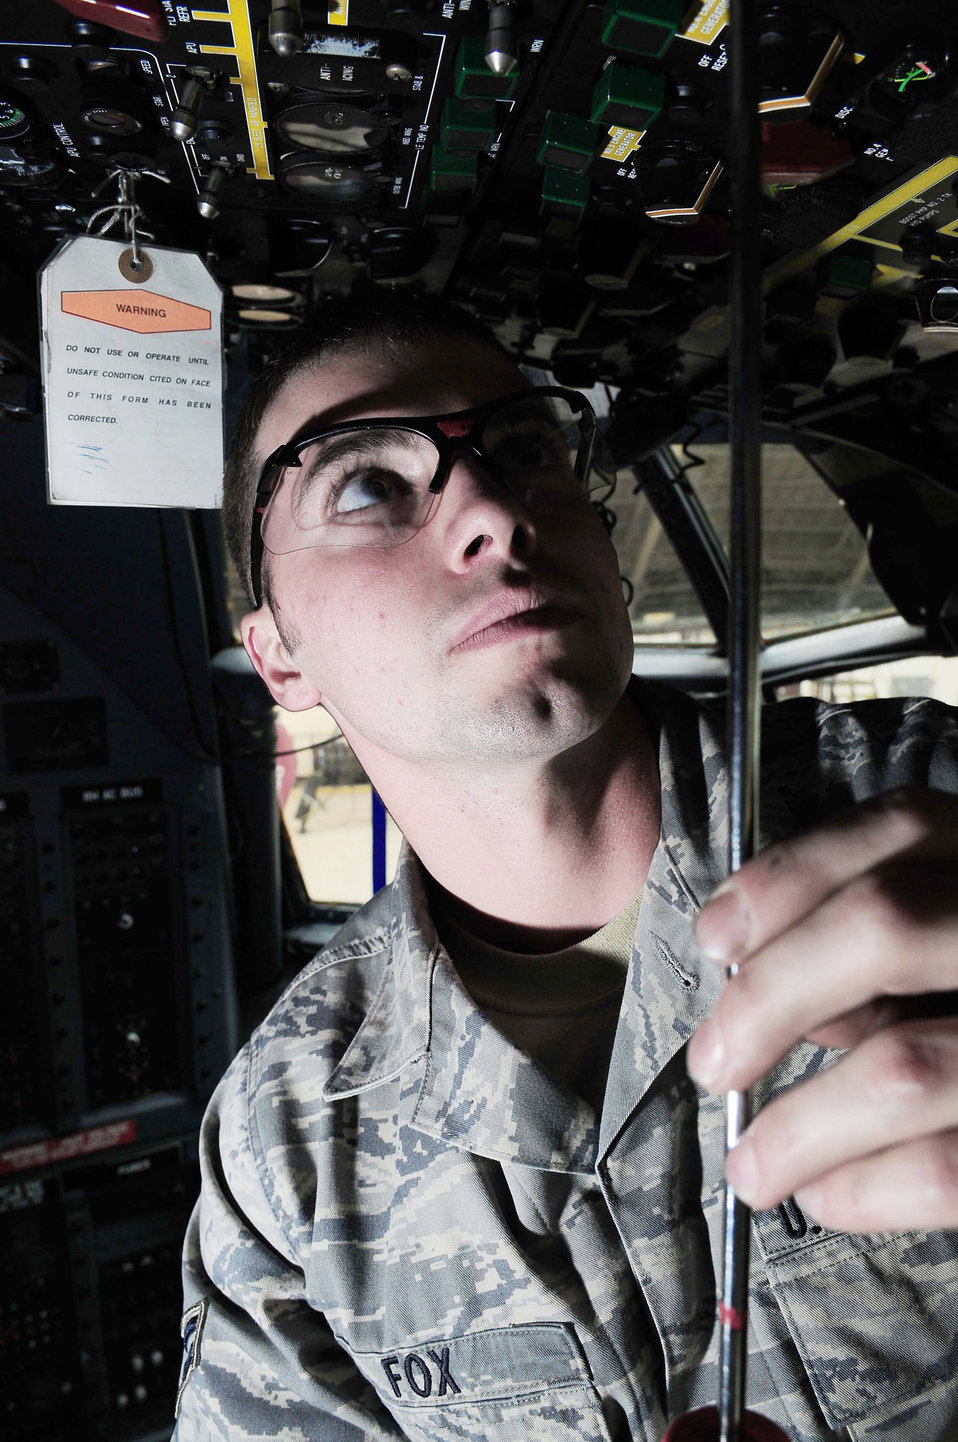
Yokota maintainers use AFSO21 to improve C-130 inspection process

Airman 1st Class Branden Fox lowers an overhead instrument panel in the cockpit of a C-130 Hercules March 16, 2010, at Yokota Air Base, Japan. Airman Fox is a 374th Maintenance Squadron crew chief.